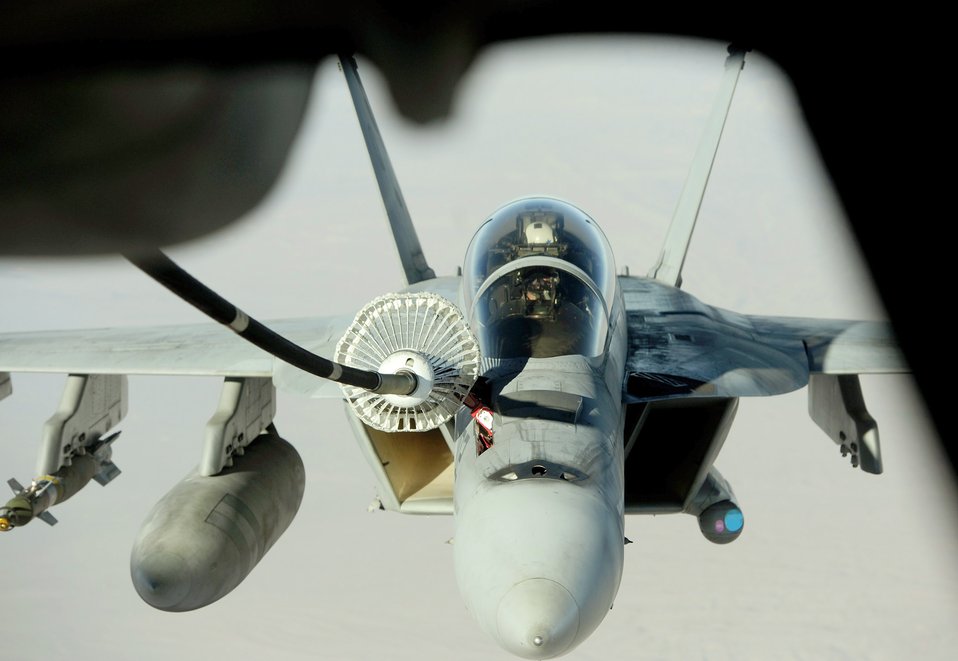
Refueling the joint fight

A U.S. Navy F/A-18 Hornet maneuvers in position behind a KC-10 Extender Nov. 25, 2010, during air refueling operations over the mountains of Afghanistan. The KC-10 is assigned to the 908th Expeditionary Air Refueling Squadron in support of operations Enduring Freedom and New Dawn.